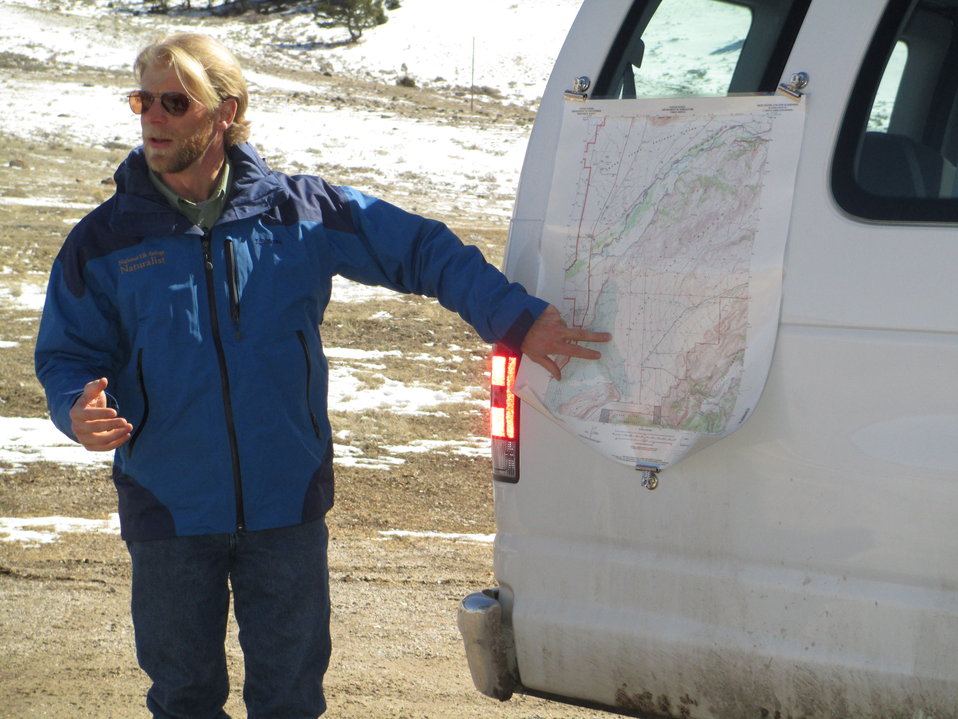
A Makeshift Classroom

A winter naturalist uses a National Elk Refuge map as a visual tool during his wildlife viewing excursion to show guests some of the locations of earlier homesteads as he discusses refuge history.